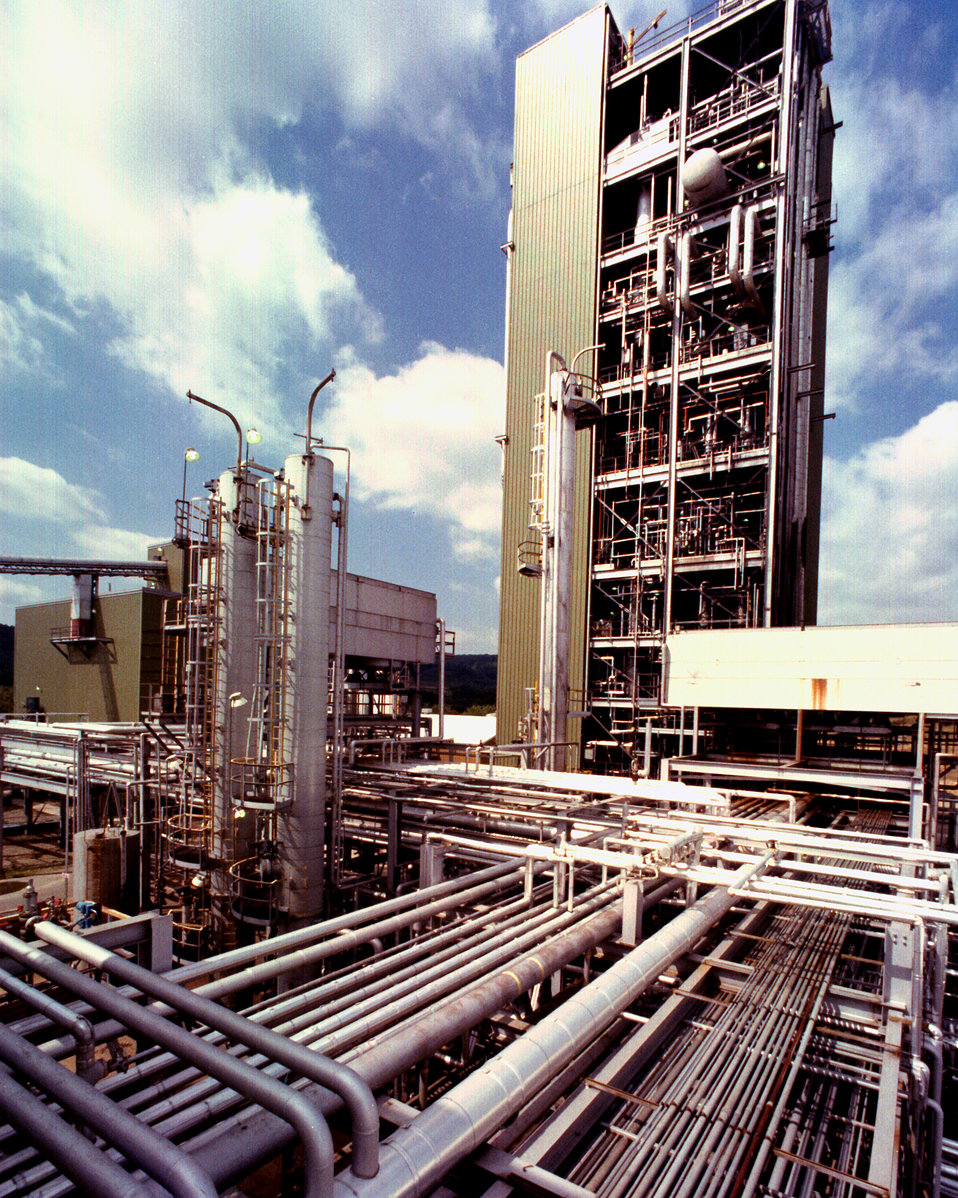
COAL PREPARATION (LEFT) AND GASIFIER (RIGHT) AT THE BIGAS PLANT.

THE BIGAS PILOT PLANT HAS A TWO-STAGE, ENTRAINED-BED GAS- IFIER. IN THIS GASIFIER, PULVERIZED COAL IS CONVERTED TO METHANE-RICH GAS BY REACTING THE COAL WITH STEAM AND OXYGEN UNDER HIGH PRESSURE. THE METHANE-RICH GAS IS PROCESSED TO REMOVE THE HYDROGEN SULFIDE AND CARBON DIOXIDE WHICH LEAVES THE HIGH BTU GAS. THE BIGAS REACTOR CAN HANDLE ALL TYPES OF COAL. DUE TO THE HIGH OPERATING TEMPERATURE OF OVER 2500 DEGREES F., THERE IS NO TAR IN THE PRODUCT GAS, THUS SIMPLIFYING THE GAS CLEANUP STEP. HIGH METHANE YIELDS ARE ACHIEVED WITHOUT METHANATION, AND COALS CAN BE GASIFIED WITHOUT PRIOR TREATMENT BECAUSE THE PROCESS USES AN ENTRAINED-BED RATHER THAN A FIXED-BED OR FLUIDIZED-BED SYSTEM.